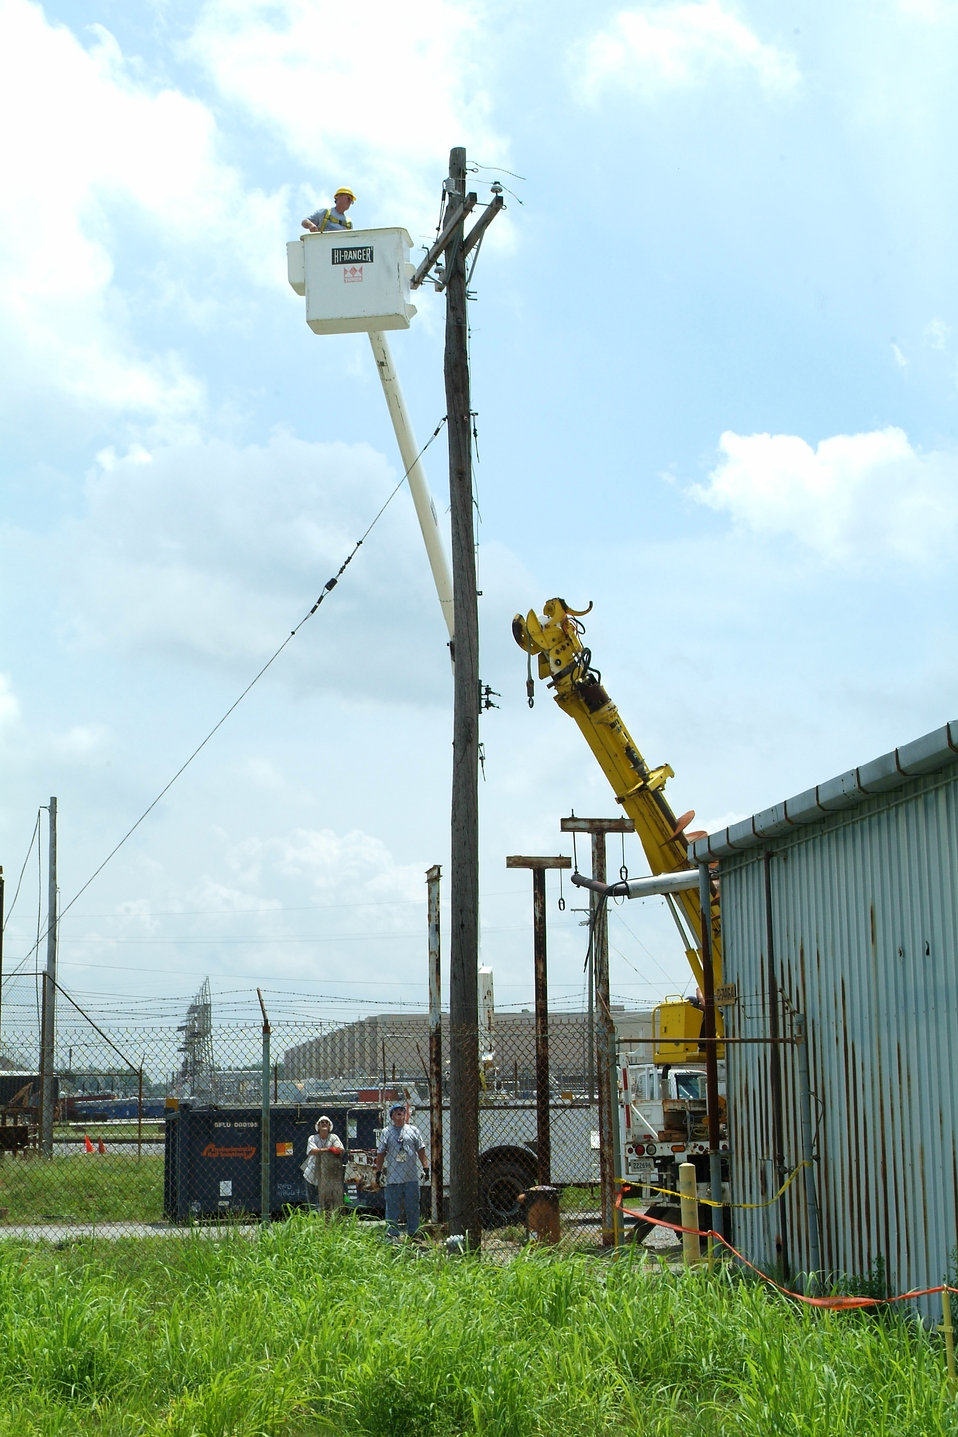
Recovery Act Demolition Serves as ‘Model Project’

A Recovery Act-funded demolition at the Paducah Gaseous Diffusion Plant is nearly a year ahead of schedule, with completion expected this month.

A 32-person work crew has disposed of accessible asbestos, loose material, and process piping in the 20,000-square-foot C-746-A East End Smelter in preparation for demolition.